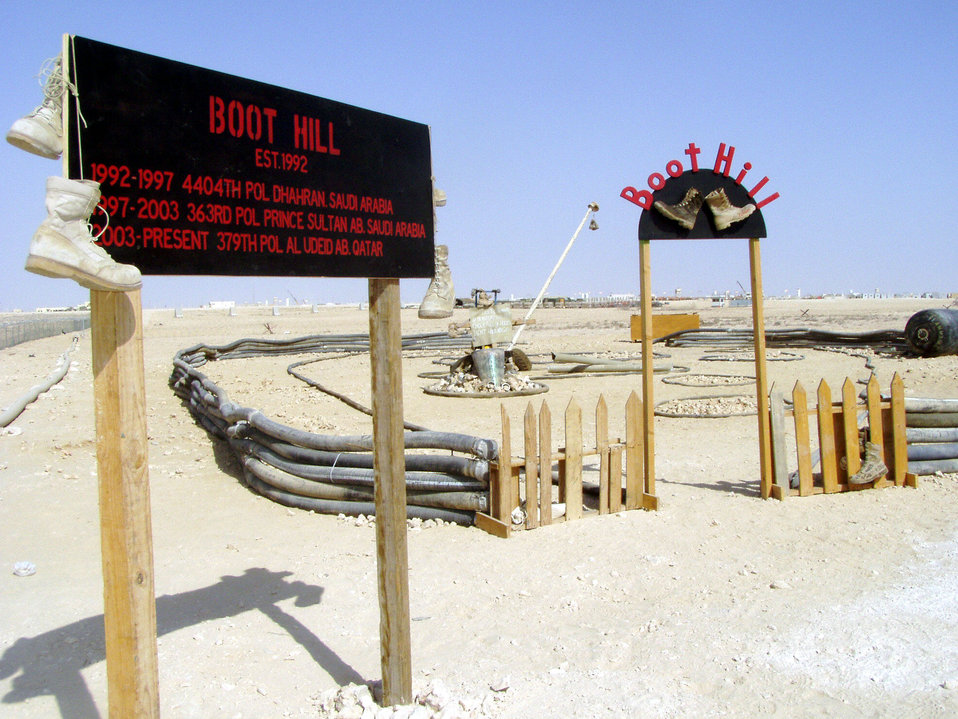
Boot Hill cemetery

AL UDEID AIR BASE, Qatar - A sign offering visitors a brief history of Boot Hill is posted just outside the